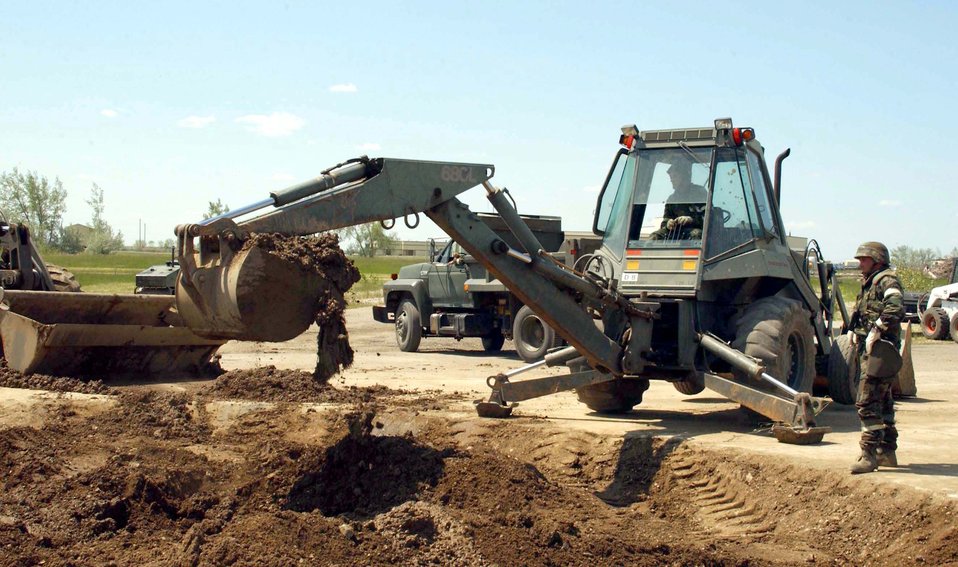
Wartime readiness

MINOT AIR FORCE BASE, N.D. -- Staff Sgt. Robert Finton repairs a simulated runway during an attack exercise here June 28. The exercise simulated a bare-base environment to test the wartime skills of Airmen. Sergeant Finton is assigned to the 5th Civil Engineer Squadron.